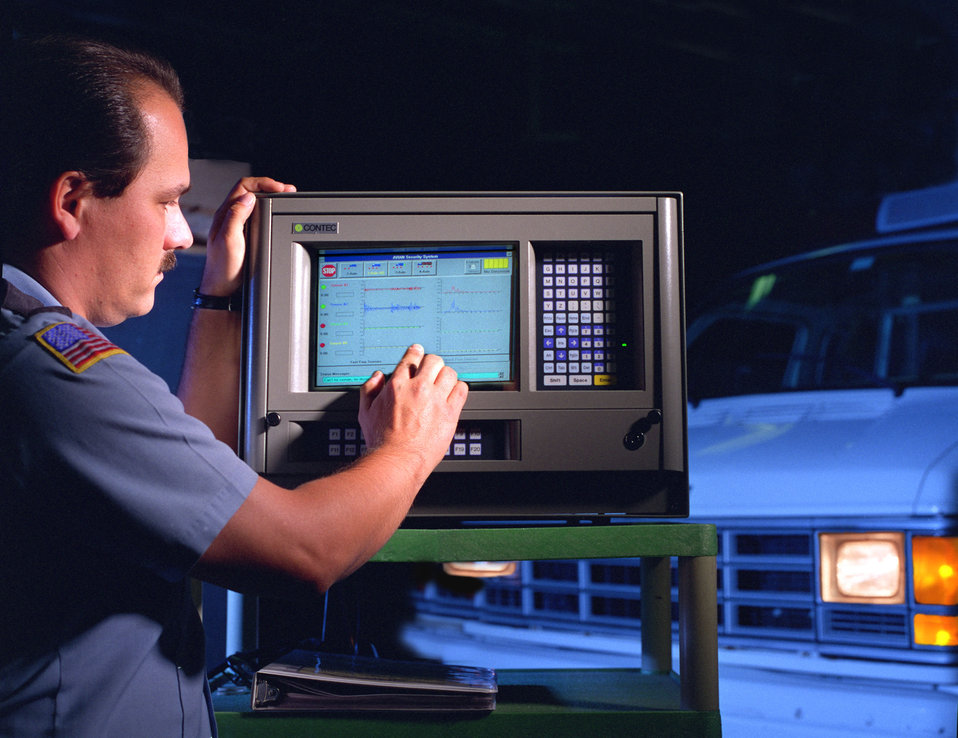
Heartbeat Detector at Oak Ridge National Lab.

97-495 DOE photo by Lynn Freeny

Heartbeat Detector at Oak Ridge National Lab. Oak Ridge Tennessee10-16-1997